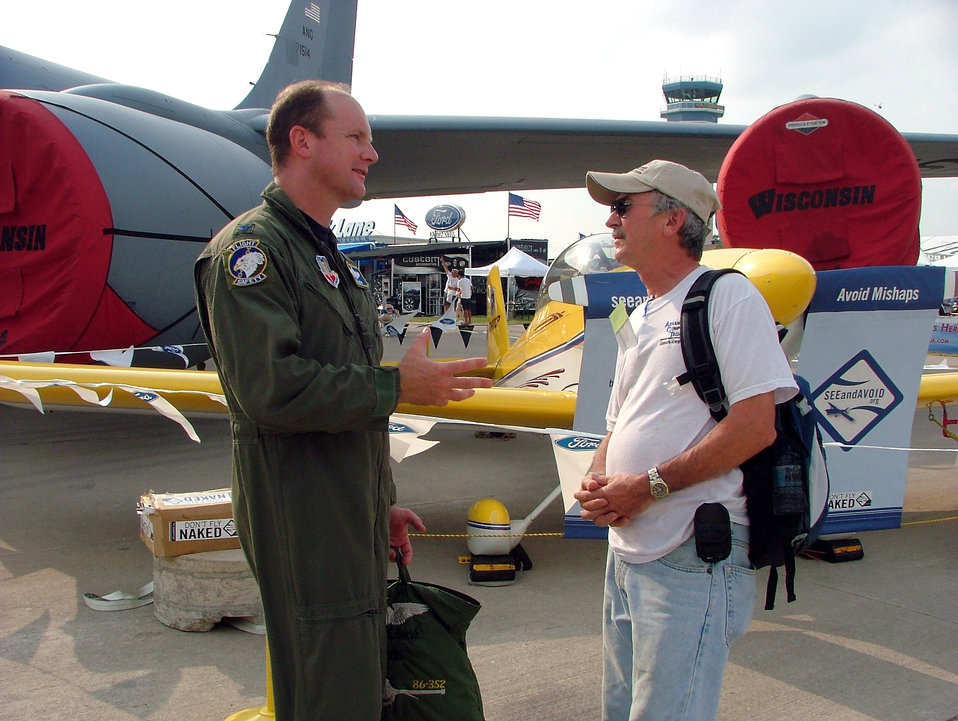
Flight safety

Lt. Col. Ned Linch, the 12th Air Force (Air Forces Southern) chief of flight safety, meets with a civilian pilot during the Experimental Aircraft Association's Oshkosh Air Venture airshow in Oshkosh, Wis., where more than 540,000 civilian and military pilots from around the globe gathered July 31 through Aug. 3. The colonel was attending the airshow to educate general aviation and civilian pilots on midair collision avoidance and on the need for flight safety and planning awareness.